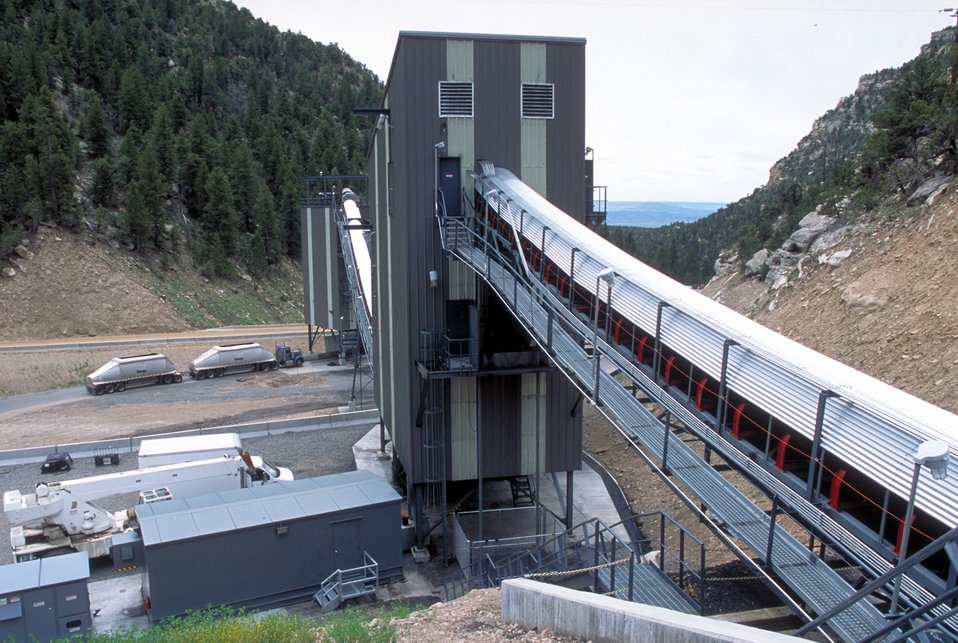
Coal production near Price, Utah.